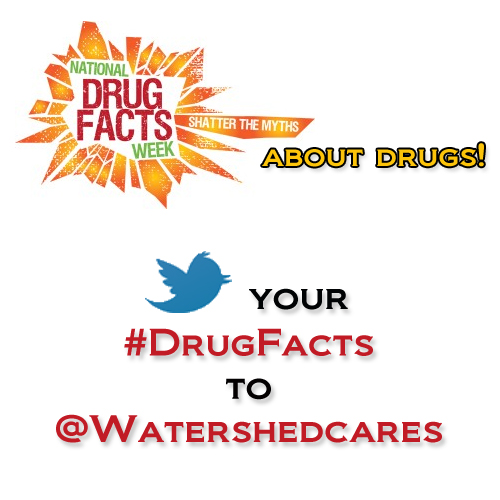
Watershed BLOG-DRUGFACTS

Palm Beach County, Fl. NDFW Events 2013